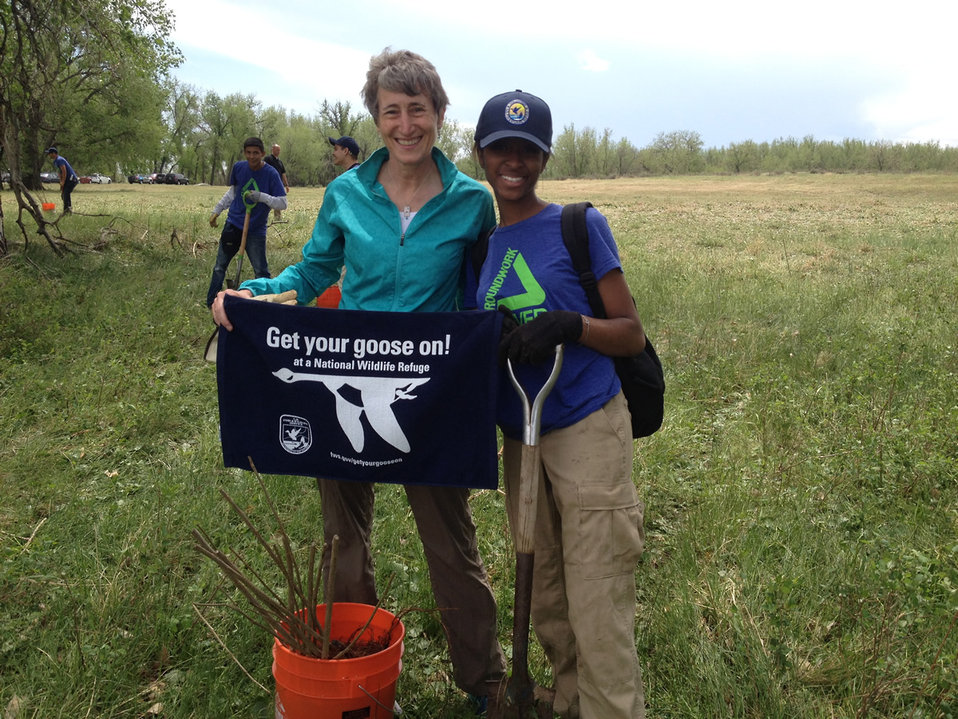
Secretary Jewell Gets Her Goose On!